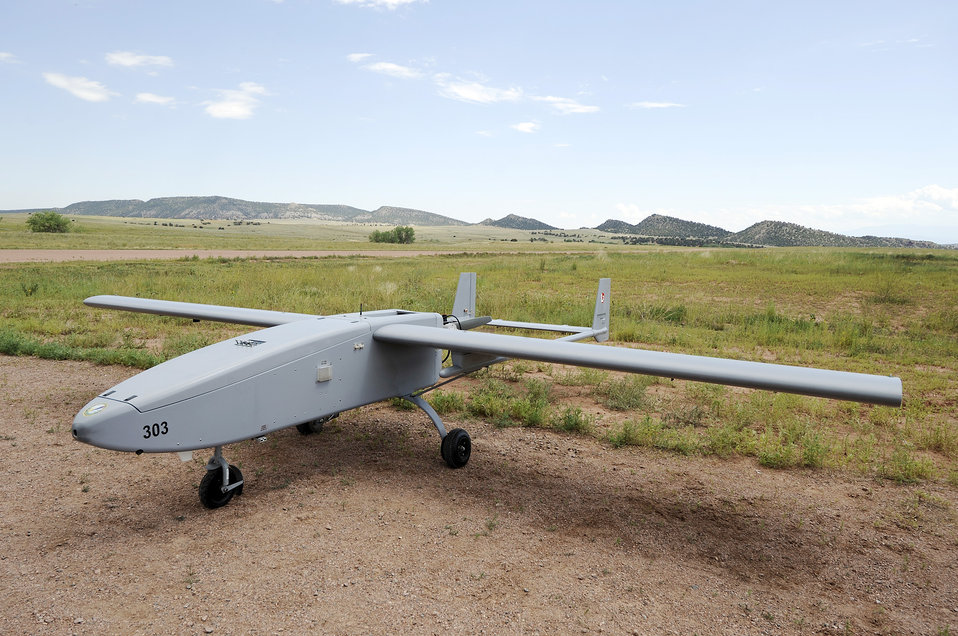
Academy officials add unmanned aircraft system into curriculum

The U.S Air Force Academy's unmanned aircraft systems Viking 300 aircraft sits before taking off July 22 at Fort Carson, Colo.